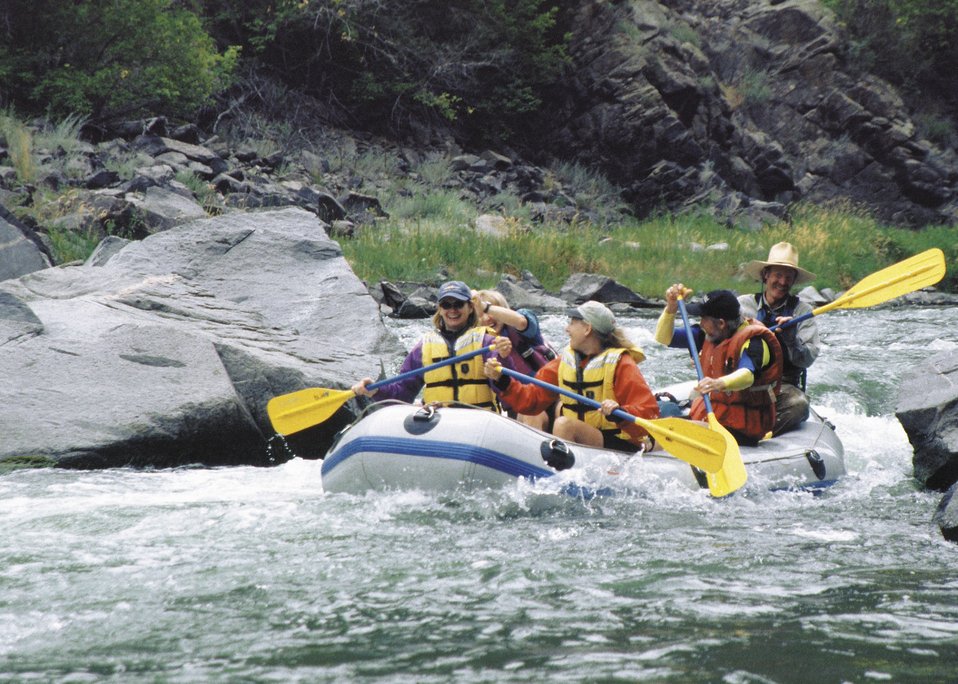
Rafting